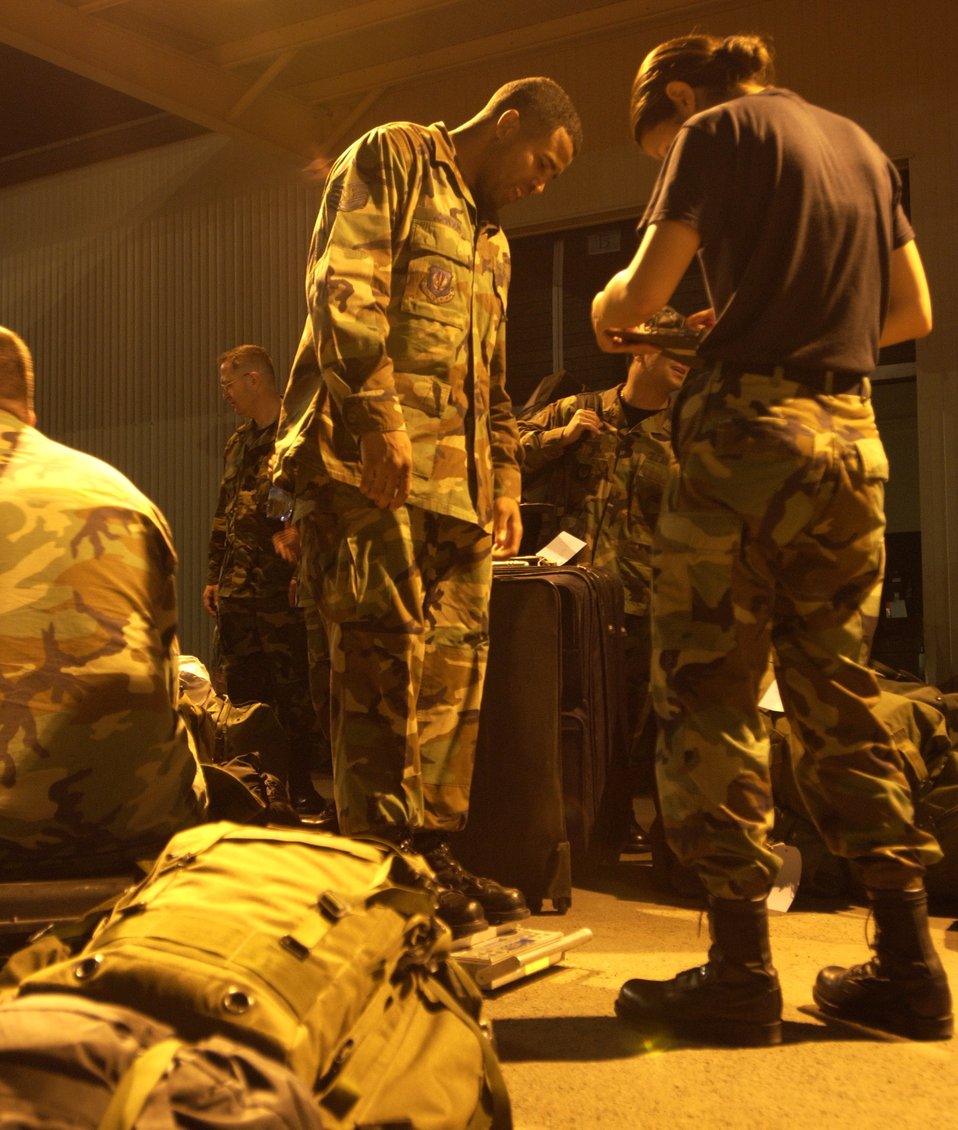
Humanitarian mission

Members of the 435th Medical Group process through the mobility line on July 19 at Ramstein Air Base, Germany, in preparation for a short-notice humanitarian mission to Cyprus. These Airmen join other Air Force units supporting the assisted departure of American citizens from Lebanon.